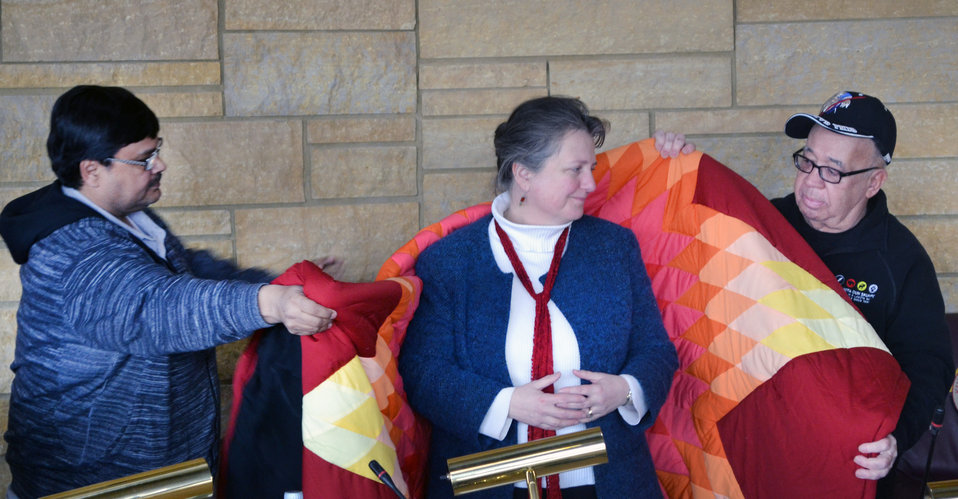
Agriculture Deputy Secretary Kathleen Merrigan hosted two roundtable meetings in Lower Brule, SD on Feb. 28, 2013. Deputy Secretary Merrigan held a press availability with tribal leaders to reaffirm the Obama Administration’s commitment to Indian Country and highlight the U.S. Department of Agriculture’s (USDA) efforts to promote business development and job creation in rural South Dakota. Two tribal leaders presented Deputy Secretary Merrigan with a Native American hand quilted blanket.